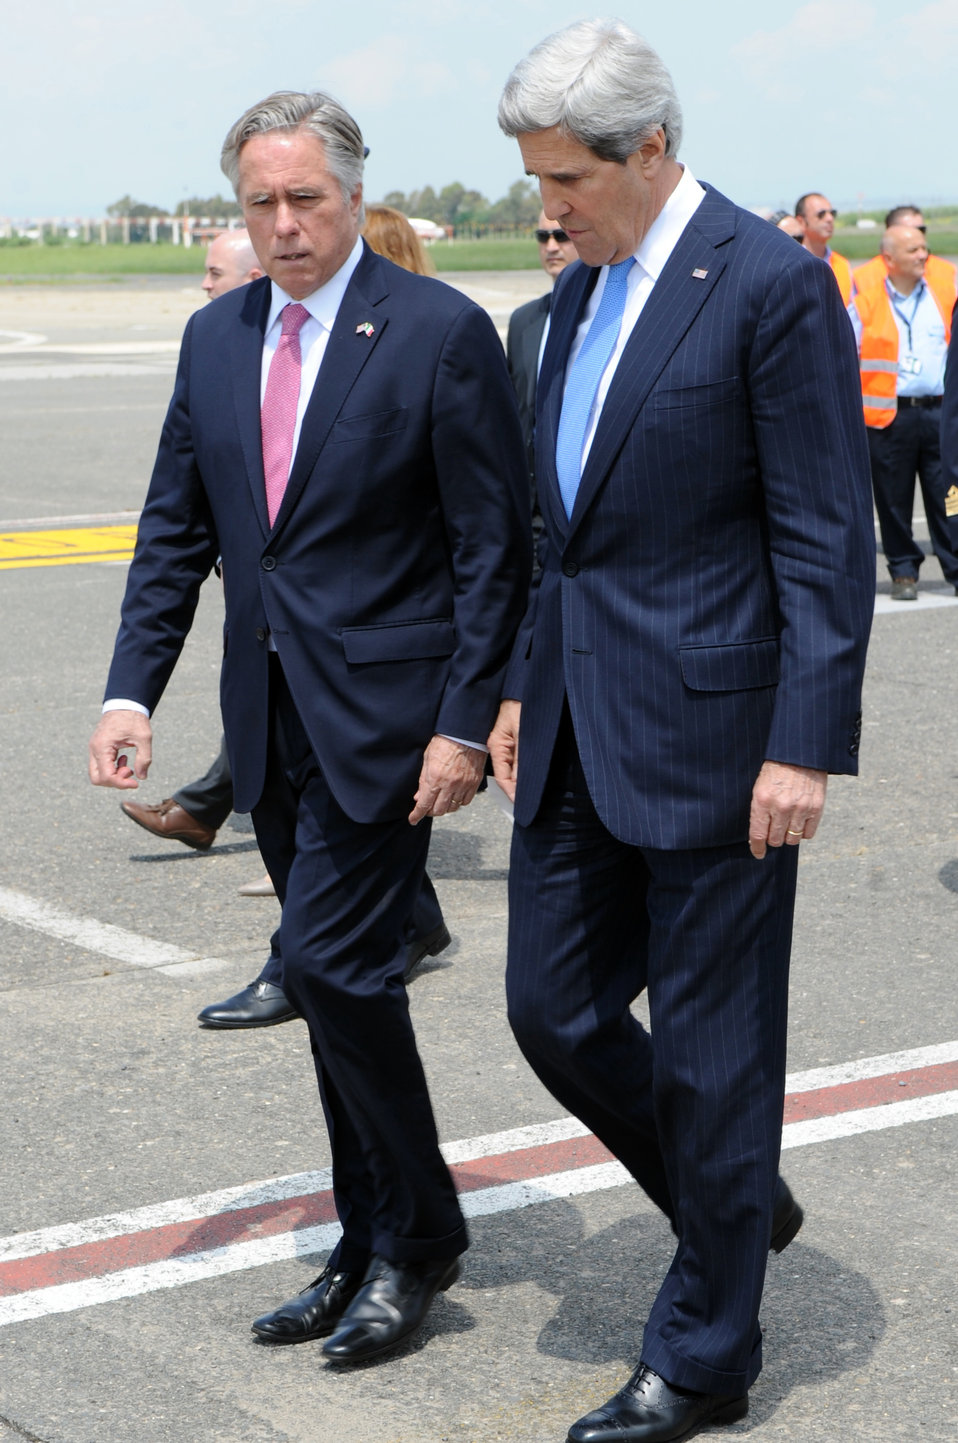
Secretary Kerry Is Greeted By Ambassador Thorne

U.S. Secretary of State John Kerry is greeted by his former brother-in-law and now U.S. Ambassador to Italy David Thorne on the tarmac upon landing at Ciampino Airport outside of Rome, Italy, on May 8, 2013.